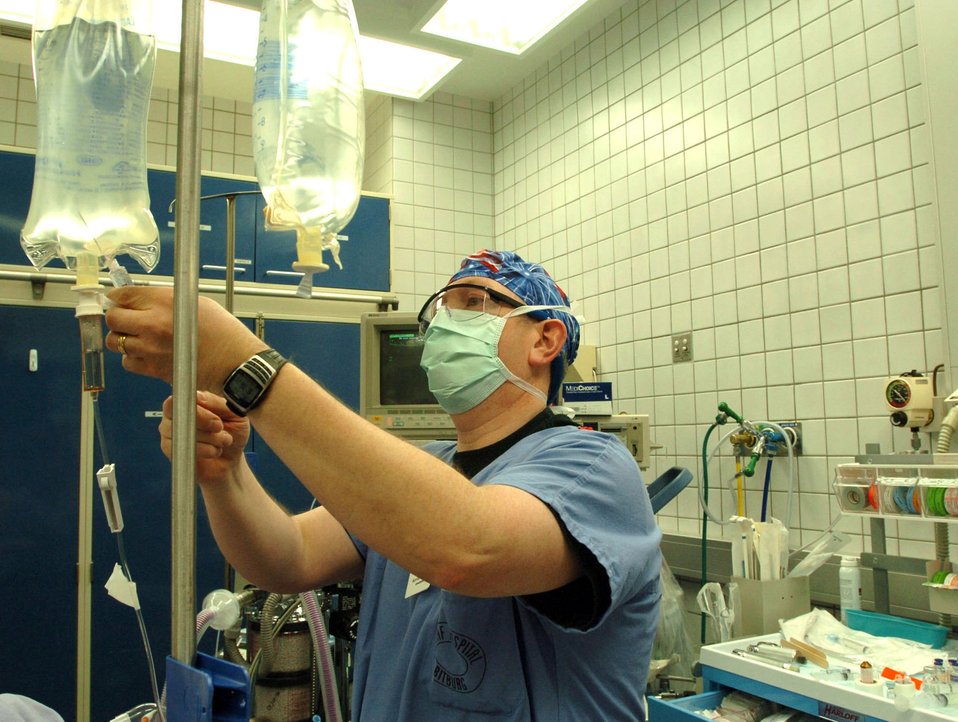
Needle little love?

SPANGDAHLEM AIR BASE, Germany (AFPN) - Lt. Col. Kevin Scharff injects medication into an IV during a scheduled Cesarean section at the Bitburg Annex Hospital Jan. 18. National Nurse Anesthetist Week kicked off Jan. 22 and goes through Jan. 28. The week honors Certified Registered Nurse Anesthetists and educates people on the importance of their work. Nurse anesthetists have been working with surgeons, dentists and podiatrists for nearly 150 years to deliver safe anesthetic care. The Bitburg hospital has three nurse anesthetists on staff who provide care to about 900 servicemembers and their families each year. The team also augments Landstuhl Army Regional Medical Center in support of Operation Iraqi Freedom. Colonel Scharff is the 52nd Medical Operations Squadron chief nurse anesthetist.